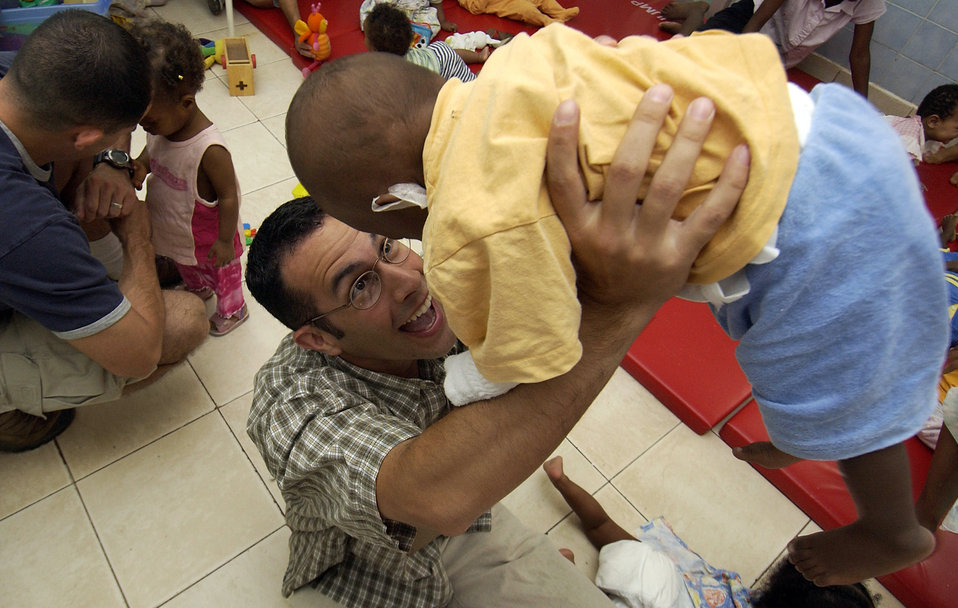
Helping Hand

AFRICA -- Capt. Chuck Rohrig entertains a youngster while volunteering at an orphanage here. U.S. servicemembers volunteer to help feed, change, bathe and clothe the infants twice a day. Captain Rohrig is assigned to the 1st Combat Camera Squadron at Charleston Air Force Base, S.C.